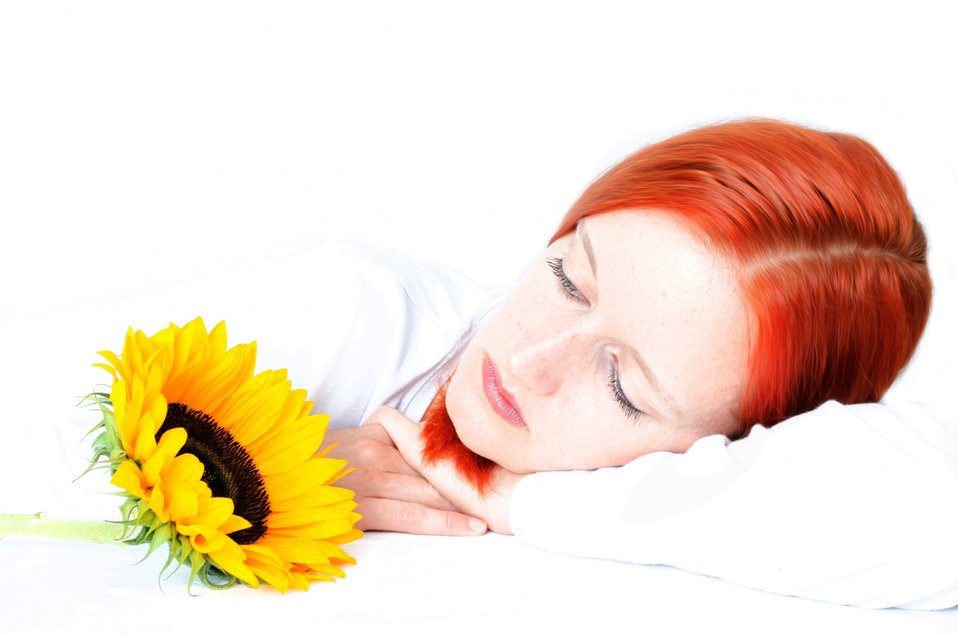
Woman and sunflower.